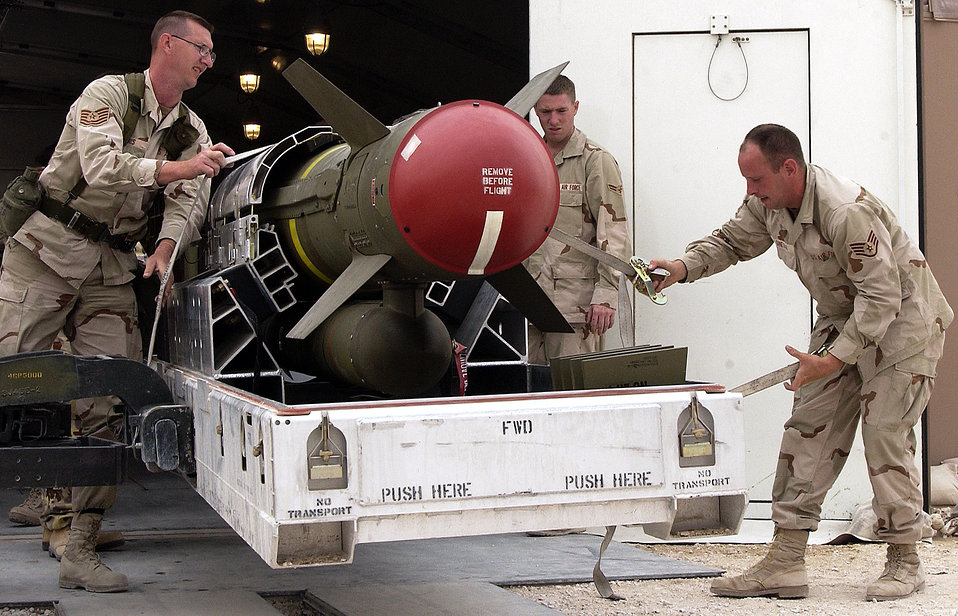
A big bomb

OPERATION IRAQI FREEDOM -- Members of the 379th EMXX Squadron, roll out a AGM-130 bomb to be delivered to the flight line at this forward-deployed location on March 21, 2003. The 379th Ammo squadron has built more than 5,000 bombs in the past four weeks for aircraft in support of Operation Enduring Freedom.